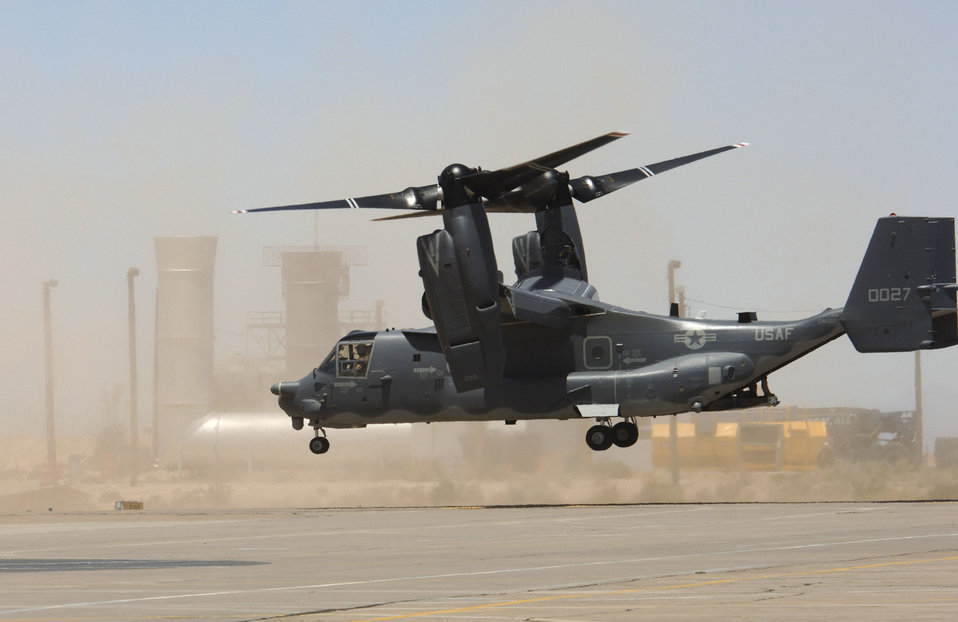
Ospreys in flight

An Air Force CV-22 Osprey takes off from Holloman Air Force Base, N.M., on Friday, May 26, 2006. The aircraft and crews are taking part in the filming of the movie